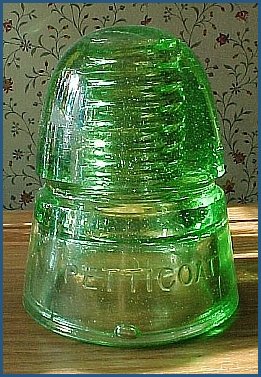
Green pin insulator Author:Lee Brewer; Source: Picture taken by Lee Brewer:This image may be used by anyone for any purpose.